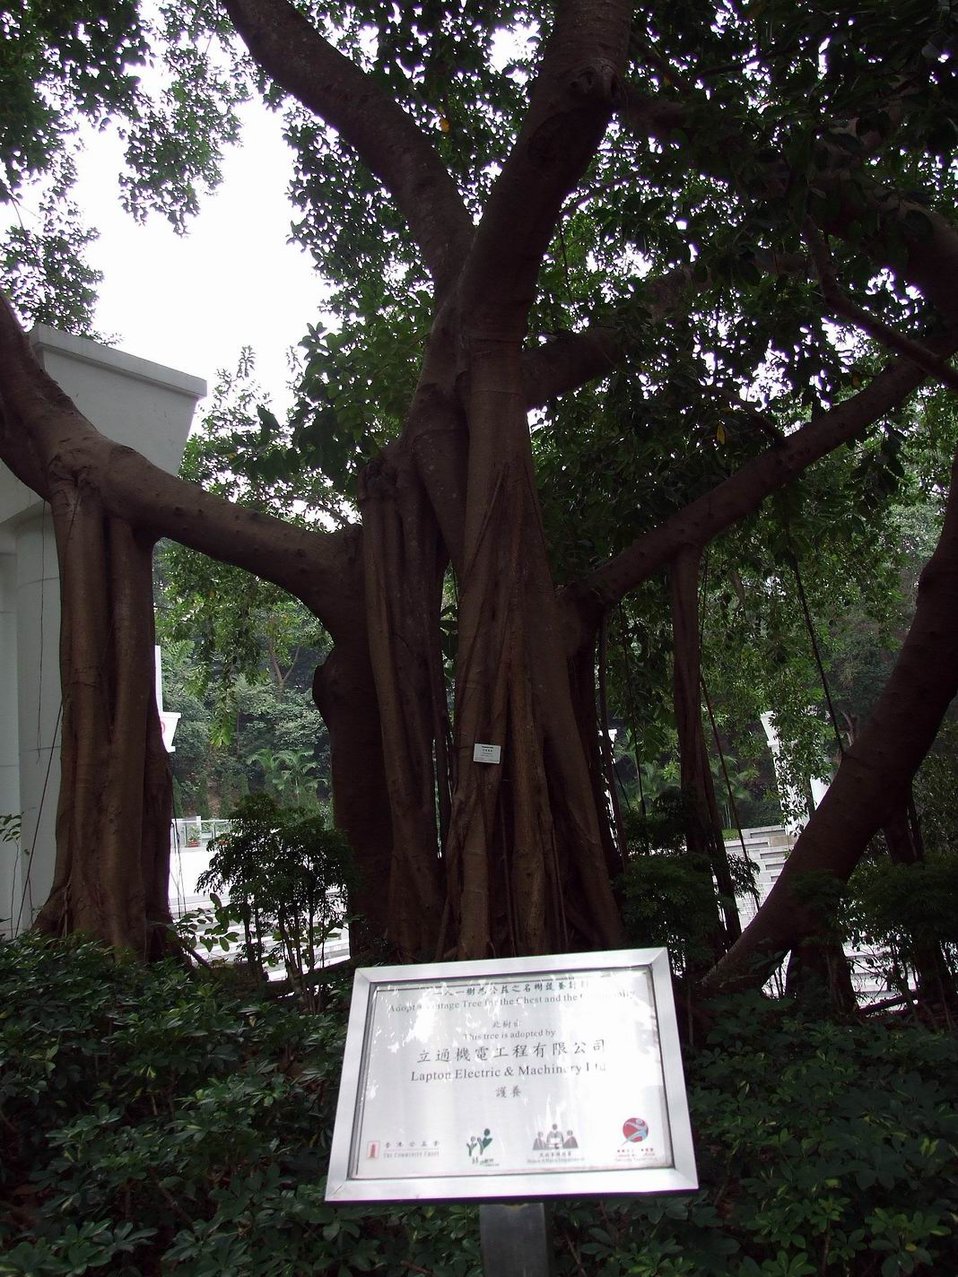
編號CW/109的zh:印度橡樹